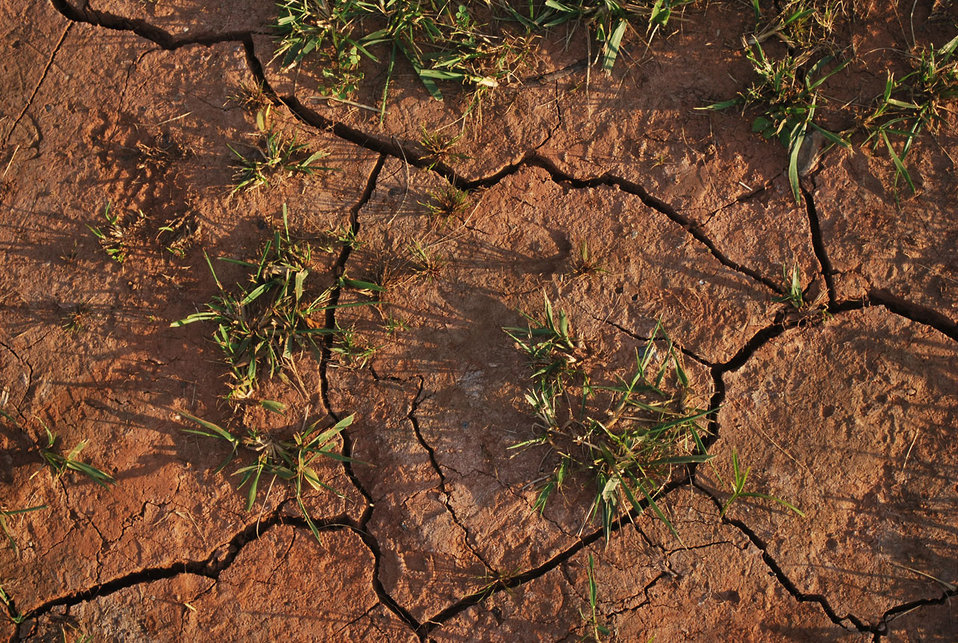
Drought

Cracked dry soil.